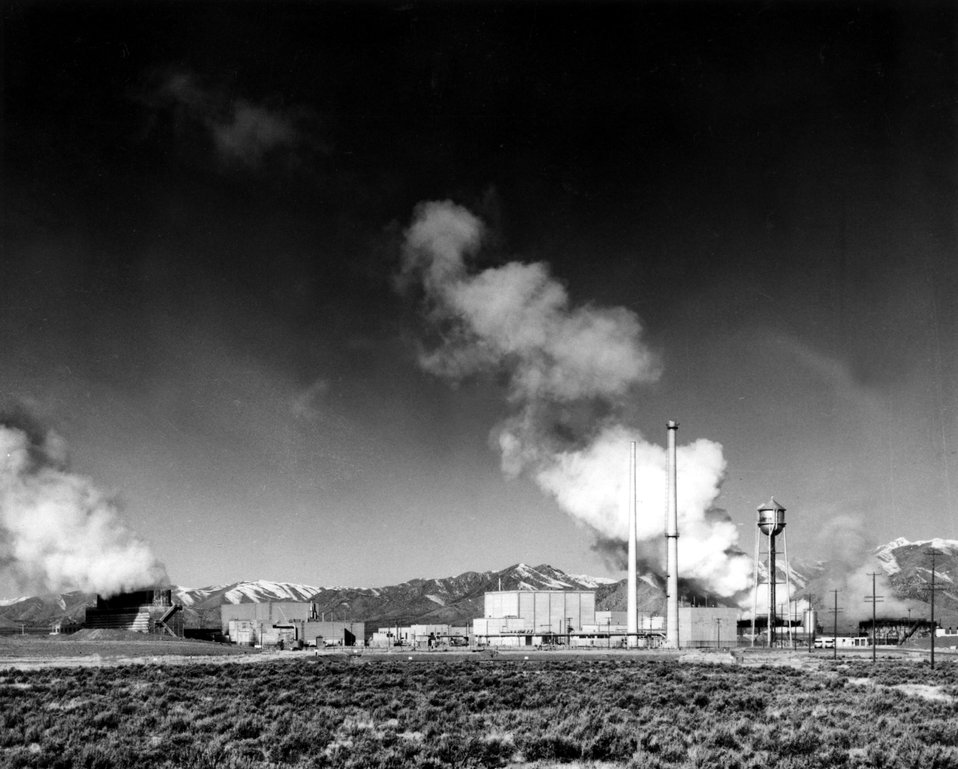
Steam rises from coolant towers at the Test Reactor Area at the U.S. Atomic Energy Commission's National Reactor Testing Station in Idaho. Circa 1974.